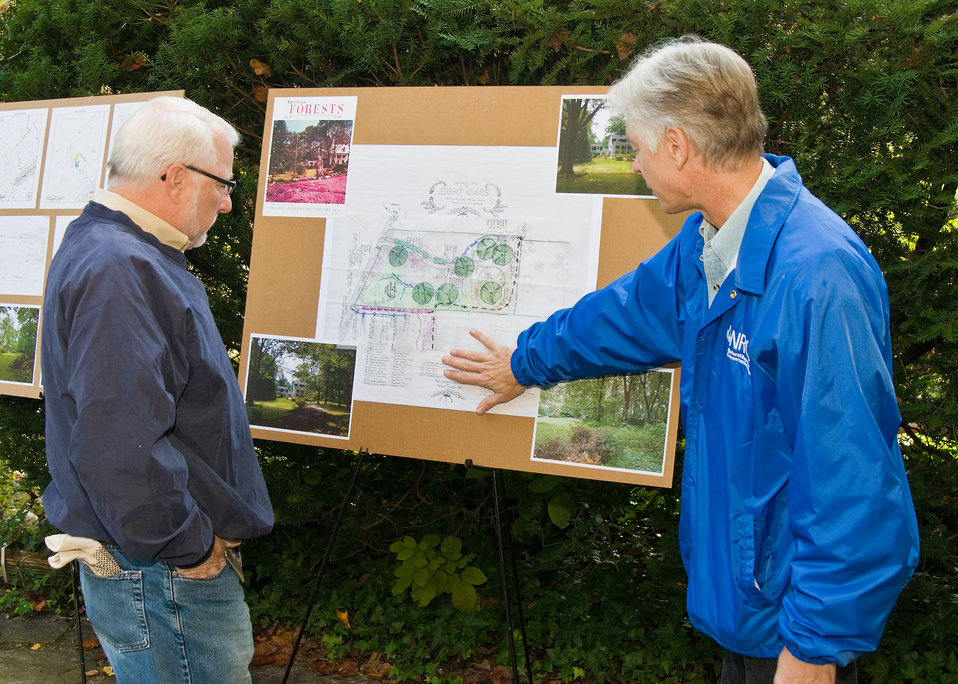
Dave White (left), Chief Natural Resources Conservation Service listens to Robert Snieckus (right), National Landscape Architect, Natural Resources Conservation Service, explain the soil and topographical survey and drainage analysis prepared by the Virginia field office of the Natural Resources Conservation Service for the Symmes family the current residents of “Eight Oaks” the home of Dr. Hugh Hammond Bennett in McLean, Virginia on Friday, October 15, 2010 as part of the celebration of the 75th Anniversary of the Natural Resources Conservation Service. Dr. Bennett was the first Chief of the Natural Resources Conservation Service then the Soil Erosion Service. USDA Photo 10di1524-7 by Bob Nichols.